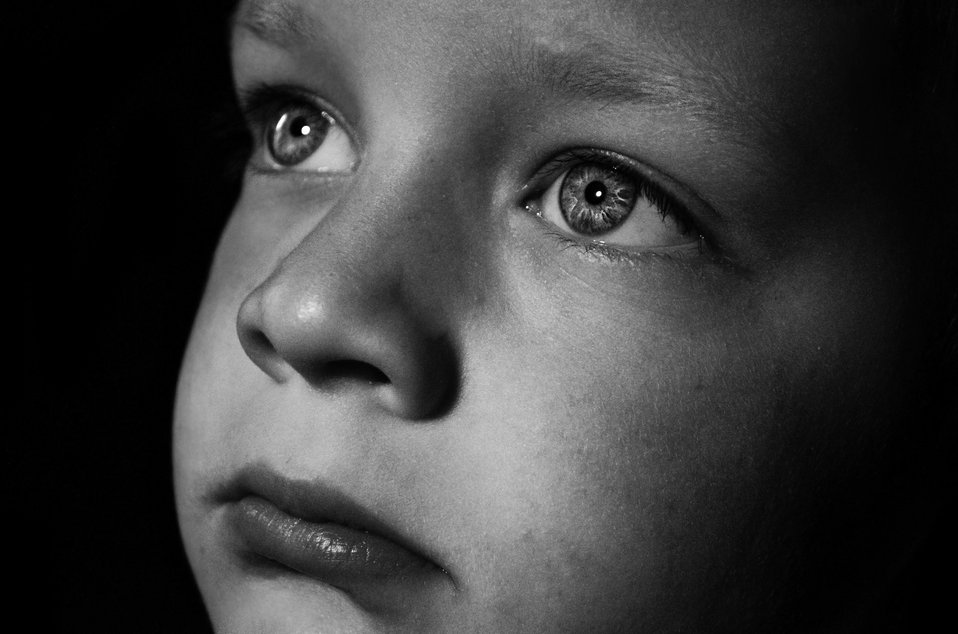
Child

Sad child - black and white.